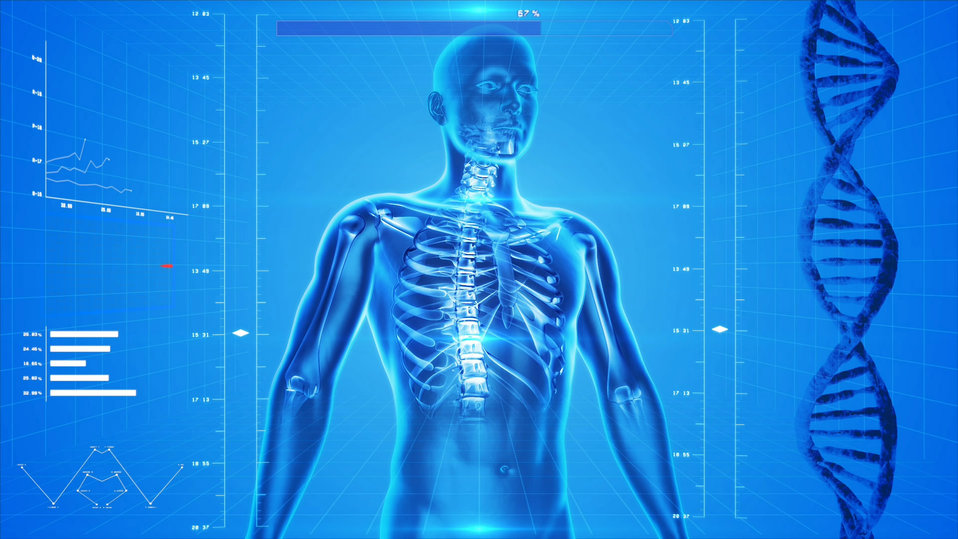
Anatomy high-tech

Man and his skeleton on high-tech background.